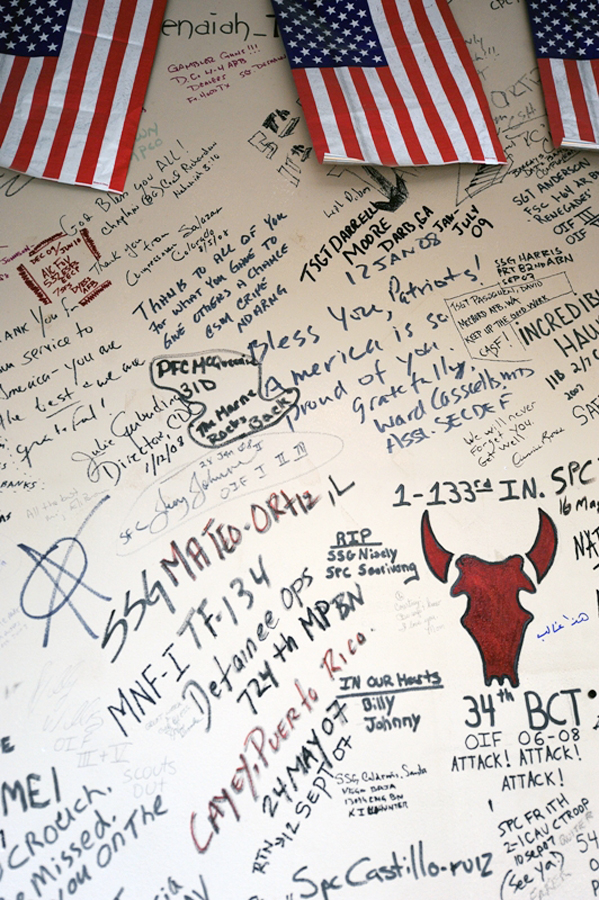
Theater hospital wall preserves memory, sacrifice

Names and messages are scribbled on the wounded warrior wall at the contingency aeromedical staging facility at Joint Base Balad, Iraq.